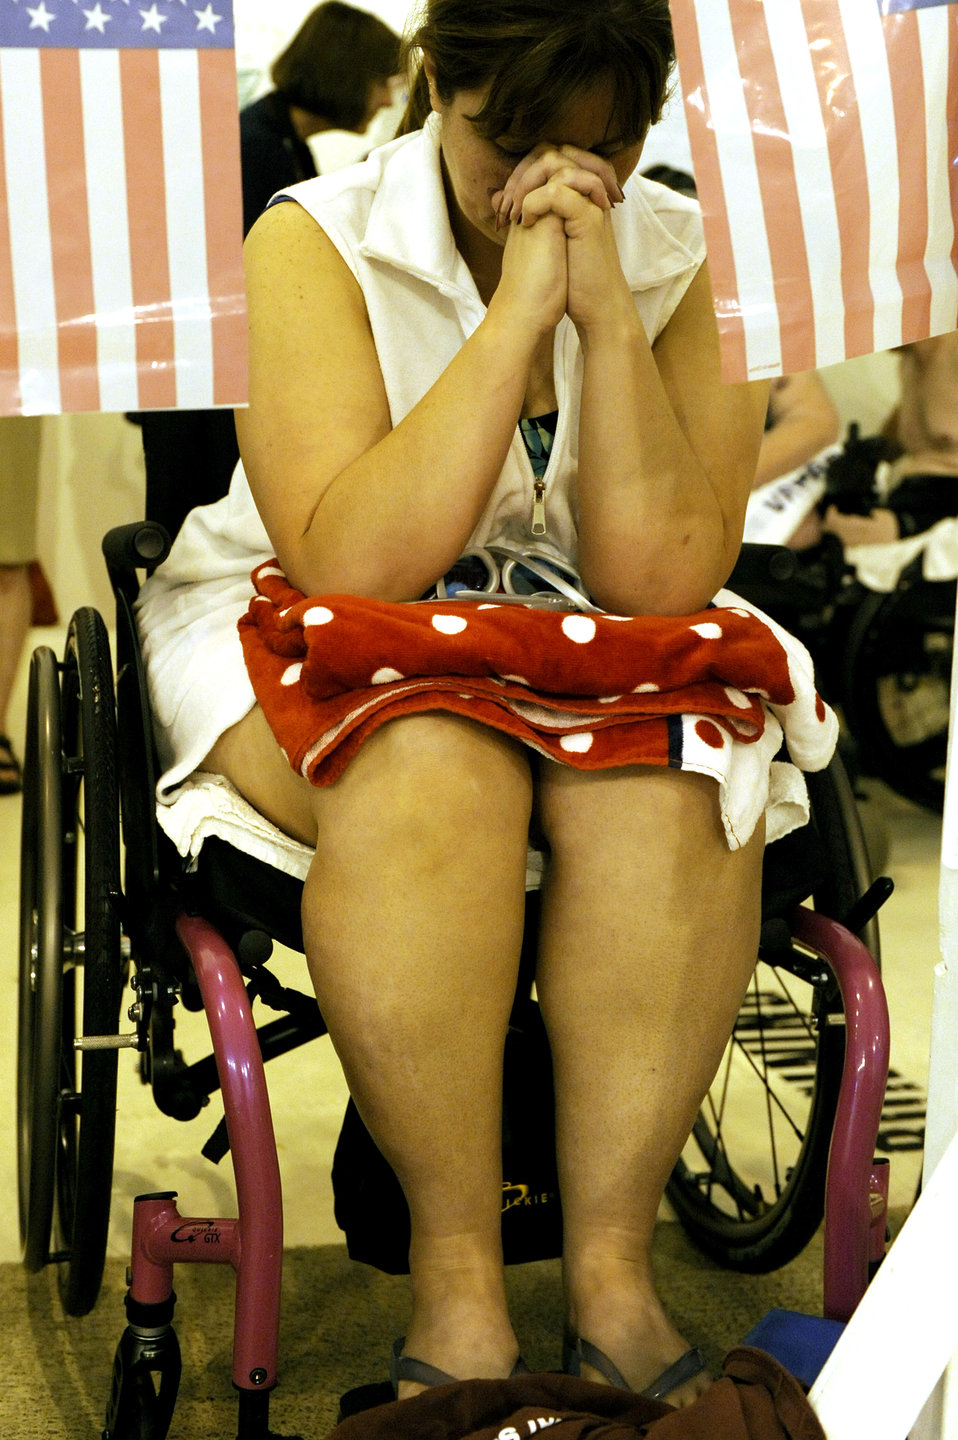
Former Airman competes in veterans Wheelchair Games

Terri Fuda prays before she competes in the swimming competition held at the Whitworth University swimming pool during the 29th National Veterans Wheelchair Games July 15 in Spokane, Wash. Ms. Fuda is an Air Force veteran from Gillespie, Ill.